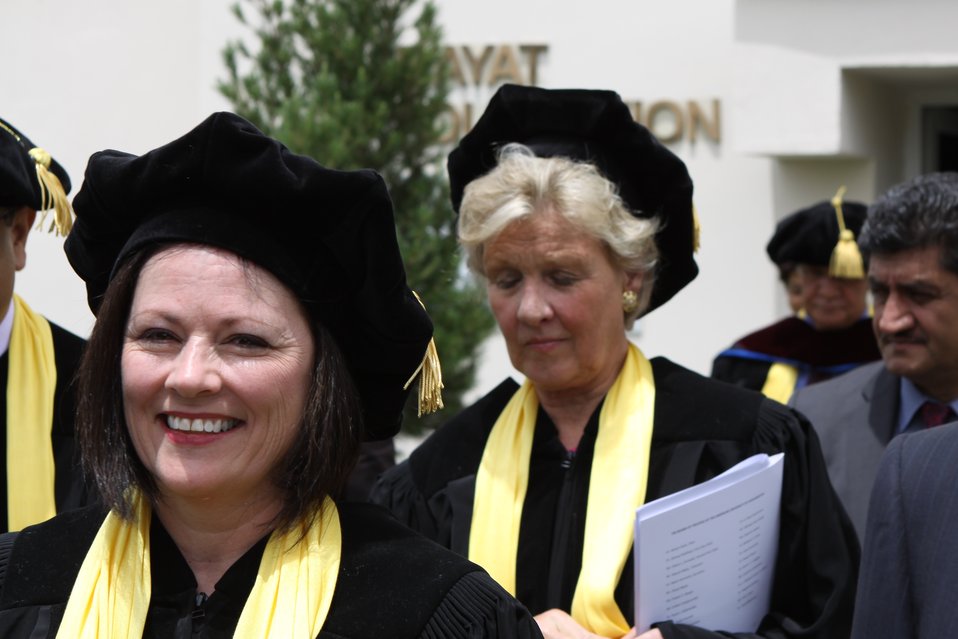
100526 AUAF Graduation 325